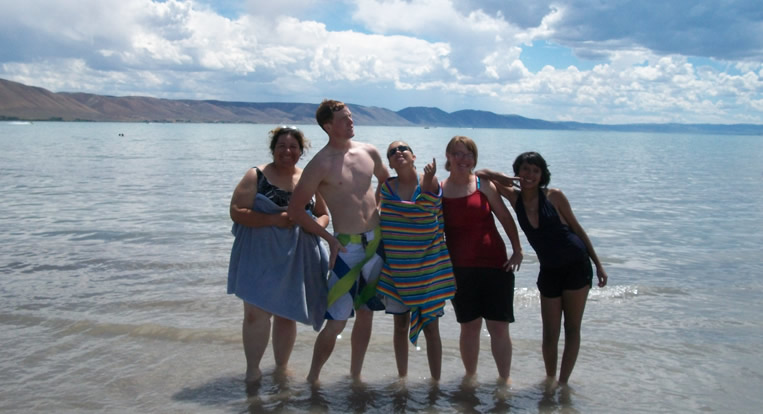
Crews Enjoy the Water at Bear Lake National Wildlife Refuge

Youth Conservation Corps crew and Utah Conservation Corps crew participate in a field trip to Bear Lake National Wildlife Refuge in Idaho at the end of the program.